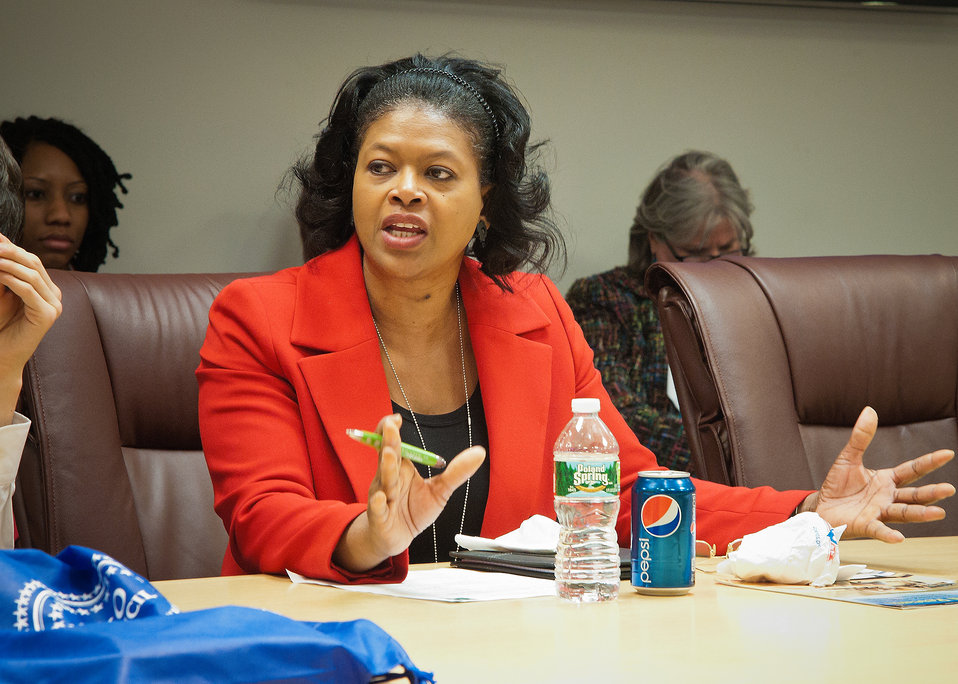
U.S. Department of Agriculture (USDA) Office of the Chief Information Officer (OCIO) Associate Chief Yvonne Jackson explains the depth and breadth of Information technology services to students from Edison Academy in Fairfax, VA during the annual USDA Information Technology (IT) Job Shadow Day held by the USDA OCIO to introduce local high school students to careers in information technology in Washington, D.C. on Tuesday, Apr. 2, 2013.